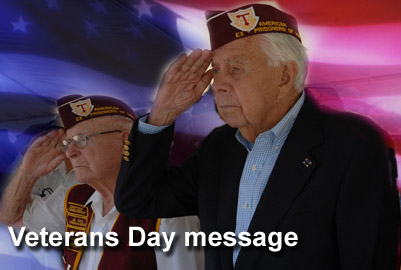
Air Force leaders issue joint Veterans Day message

Secretary of the Air Force Michael Donley and Chief of Staff Gen. Norton Schwartz issued a Veterans Day message the expresses gratitude for all veterans, past and present.